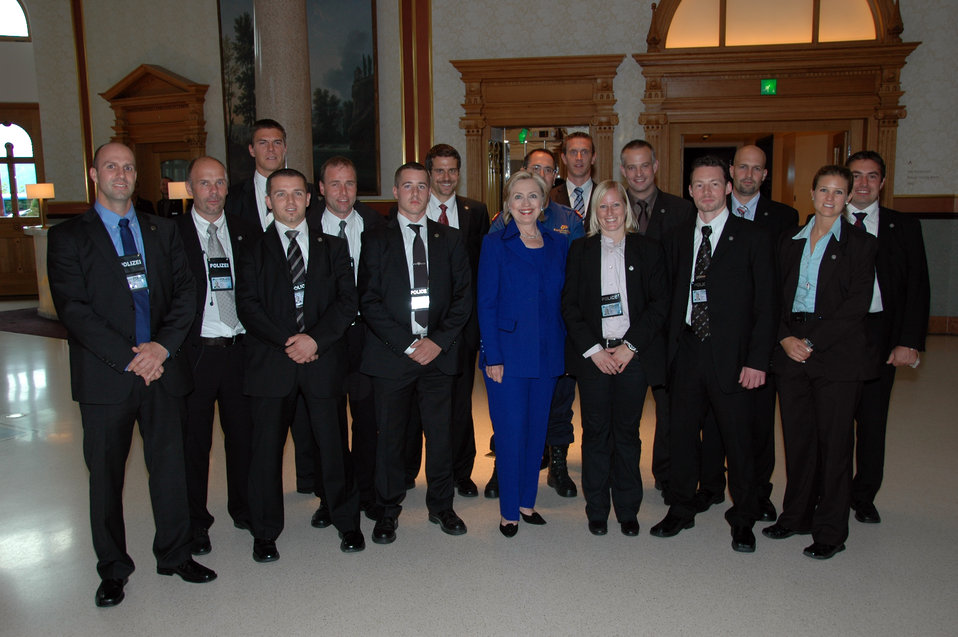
Secretary Clinton With Zurich Police

U.S. Secretary of State Hillary Rodham Clinton poses for a photo with Swiss Police in Zurich, Switzerland October 9, 2009.